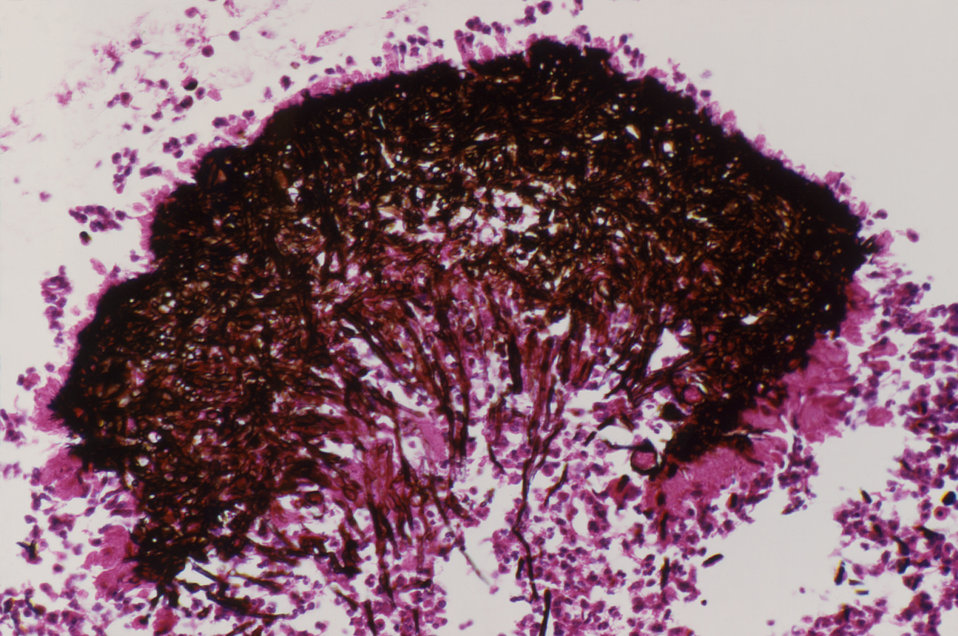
Magnified 250X, this photomicrograph revealed some of the histopathologic cytoarchitectural features exhibited by a single fungal granule of Acremonium falciforme, found in this Gomeri and H&E-stained tissue sample.